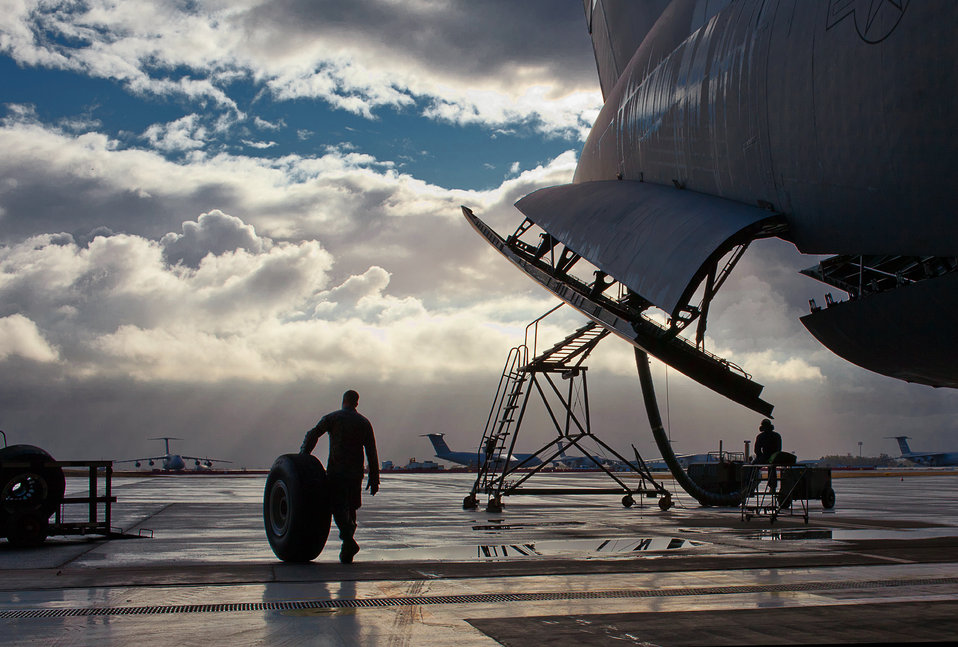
Tire change

Senior Airman Justin Evans rolls a used C-5 Galaxy tire-and-wheel assembly to collection point after its removal Oct. 6, 2011, at Travis Air Force Base, Calif. The installation's fleet will soon be part of a worldwide surge of 41 C-5 aircraft that will bring together 18 active duty and 23 Air National Guard and Air Force Reserve Command crews to move cargo and passengers in support of combatant commanders across the globe. Evans is a crew chief assigned to the 60th Aircraft Maintenance Squadron.